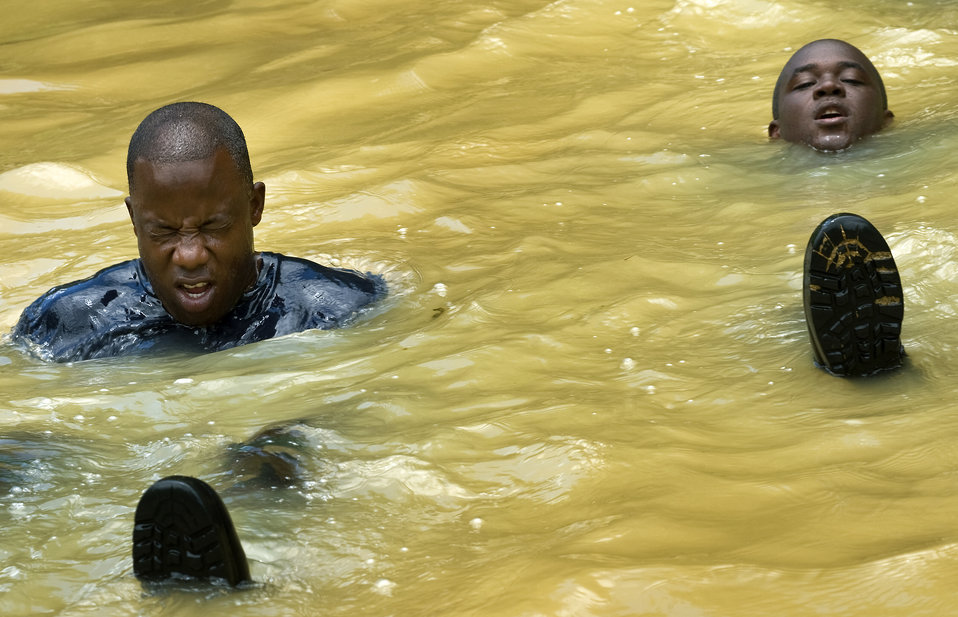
Operation Southern Partner

Members of the Royal St. Lucia Police Force's Special Service Unit try to stay afloat while practicing swift-water rescue procedures that were taught by U.S. Air Force pararescuemen June 5 during Operation Southern Partner at La Toc, St. Lucia. Operation Southern Partner is a long term commitment between U.S. and partner nations to share experiences, information, vital skills, tactics and techniques in preparation for future regional challenges that require cooperative solutions.